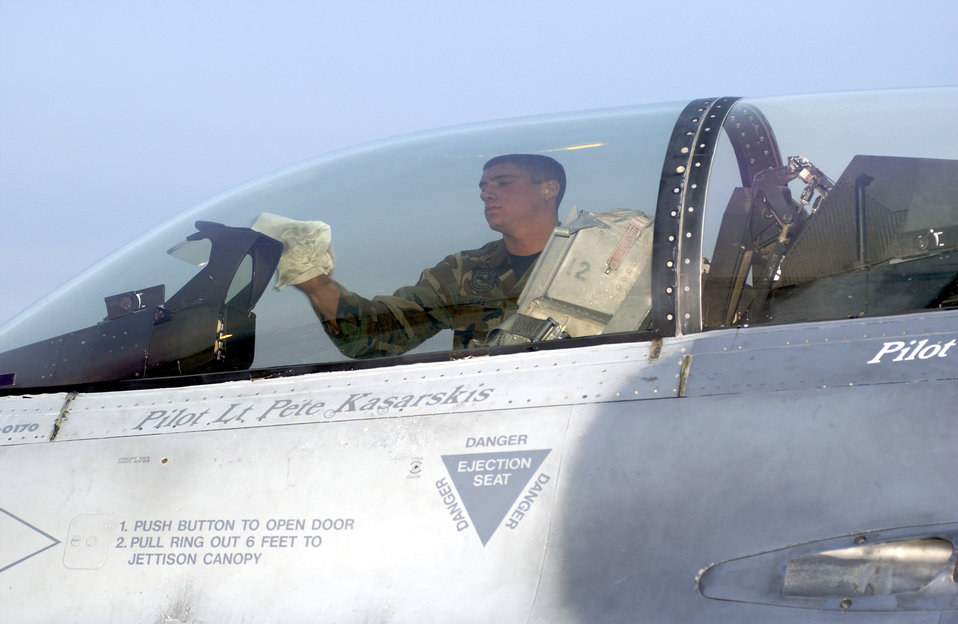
Spot shine sir

BARKSDALE AIR FORCE BASE, Calif. -- Airman 1st Class Skylar Mims washes the cockpit window of an F-16C Fighting Falcon before a launch Jan. 16 during an Air Warrior II exercise here. Airman Mims is a crew chief assigned to the 27th Aircraft Maintenance Squadron at Cannon Air Force Base, N.M.